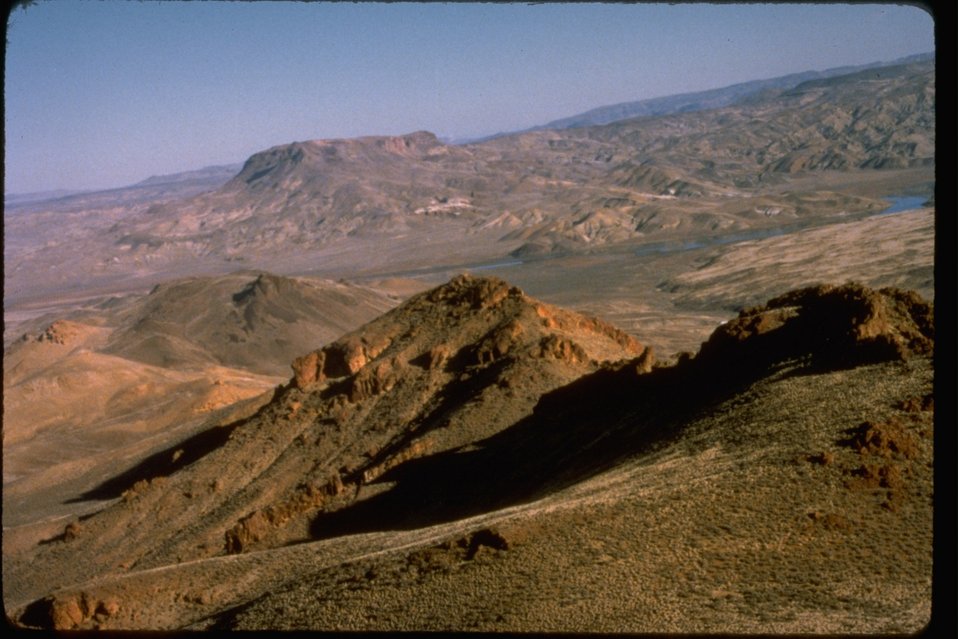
Looking at Red Butte from Blue Canyon. WSA OR 3-73.